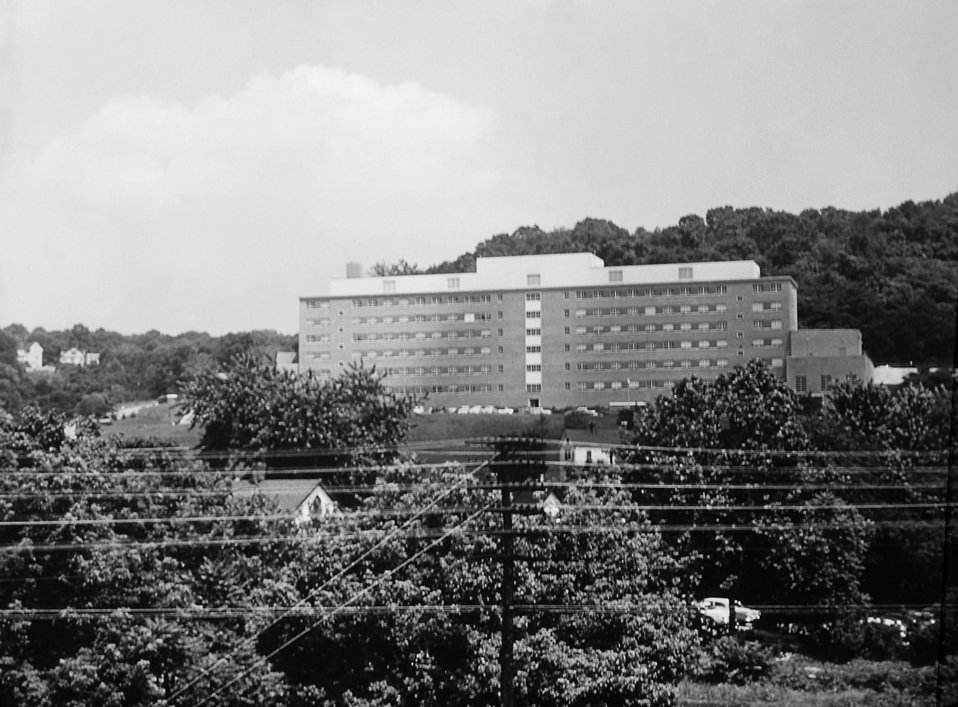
A 1950s photograph of the Public Health Service Facilities in Cincinnati, OH.